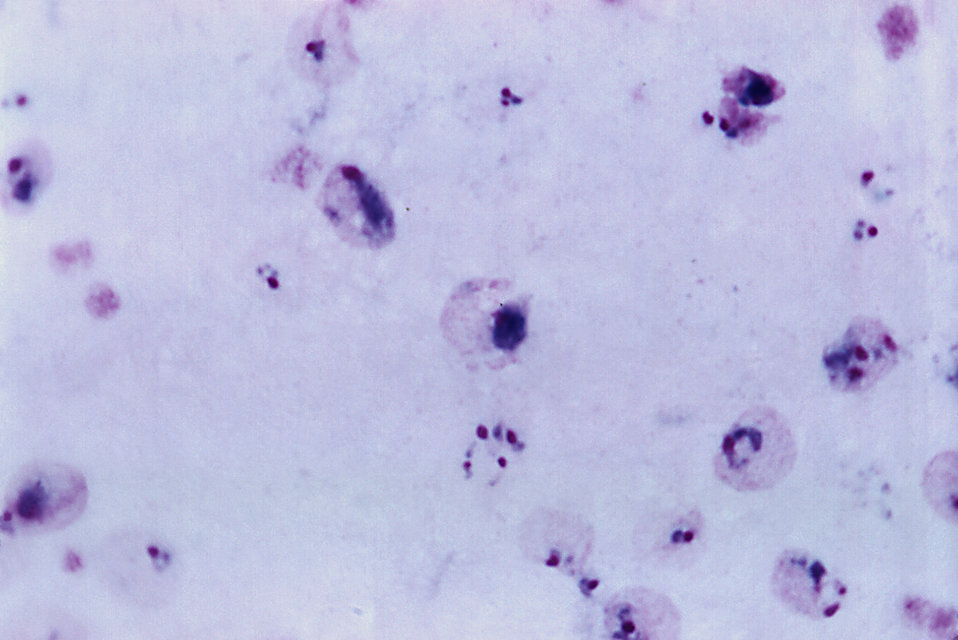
This thick film photomicrograph depicts a mature Plasmodium vivax trophozoite, using Giemsa stain; Mag. 1250X.